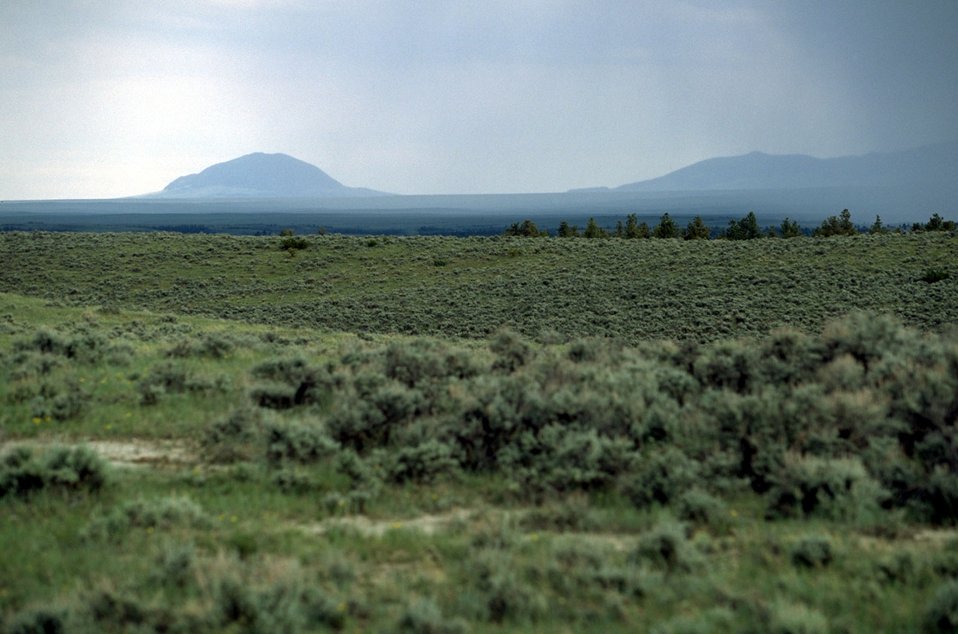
Sagebrush range with a misty Black Butte in the background